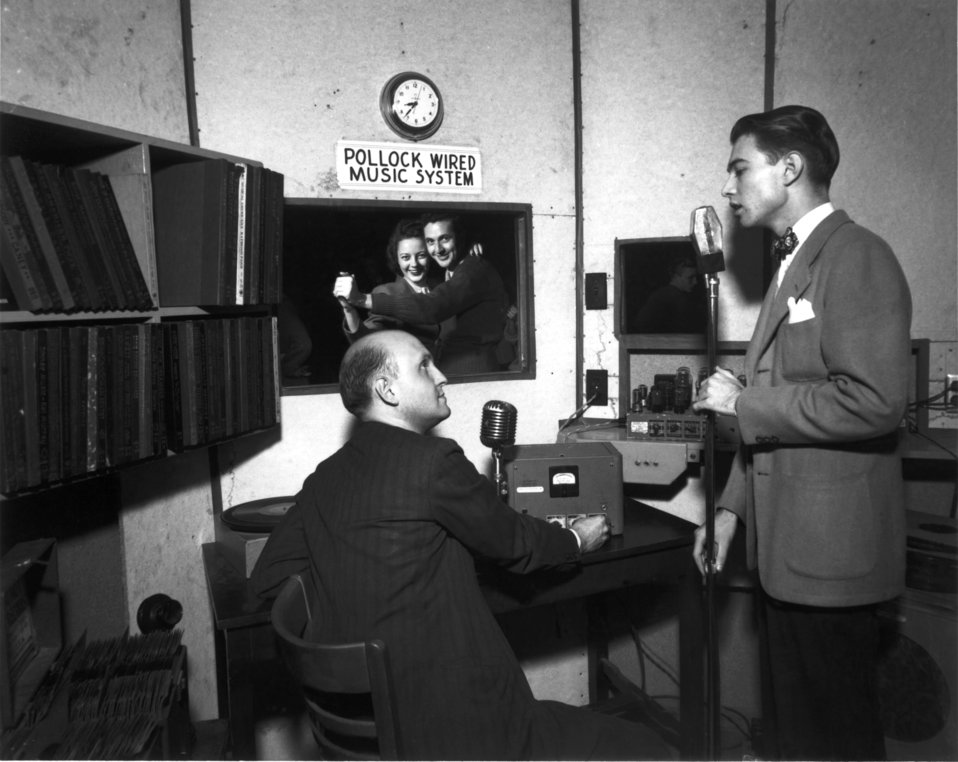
Disk Jockey

1301 DOE photo by Ed Westcott
Bill Pollock - Disk Jockey and Berl Henry singing Oak Ridge Tennessee 12-2-1945